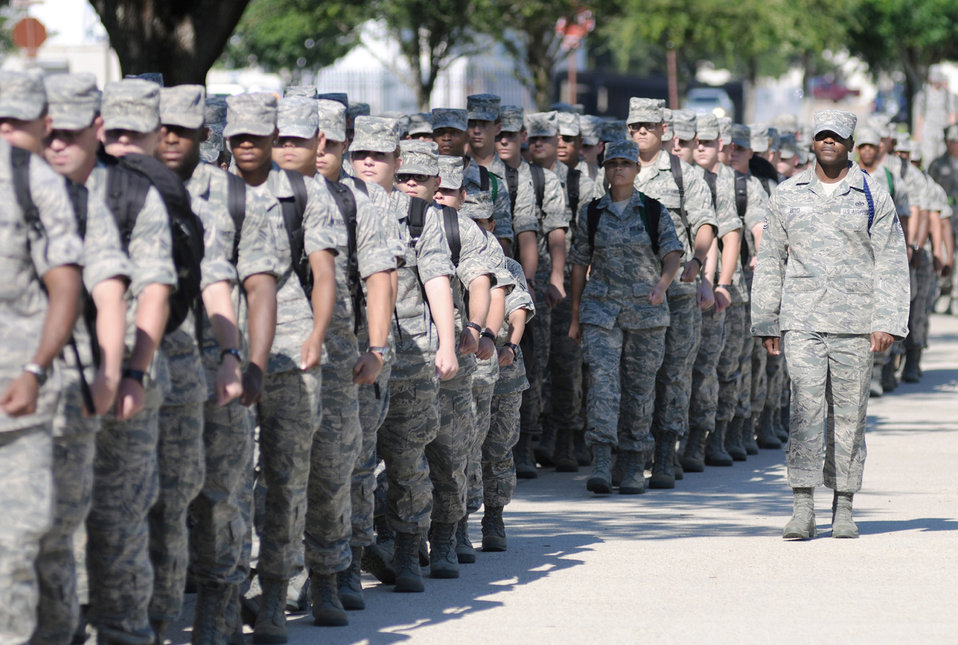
Transition program

Students in the 336th Training Squadron march Nov. 30, 2010, after classes with their military training leader, Tech. Sgt. Terrance Boyd. A new technical training management system was implemented Nov. 15, 2010, by 2nd Air Force officials.